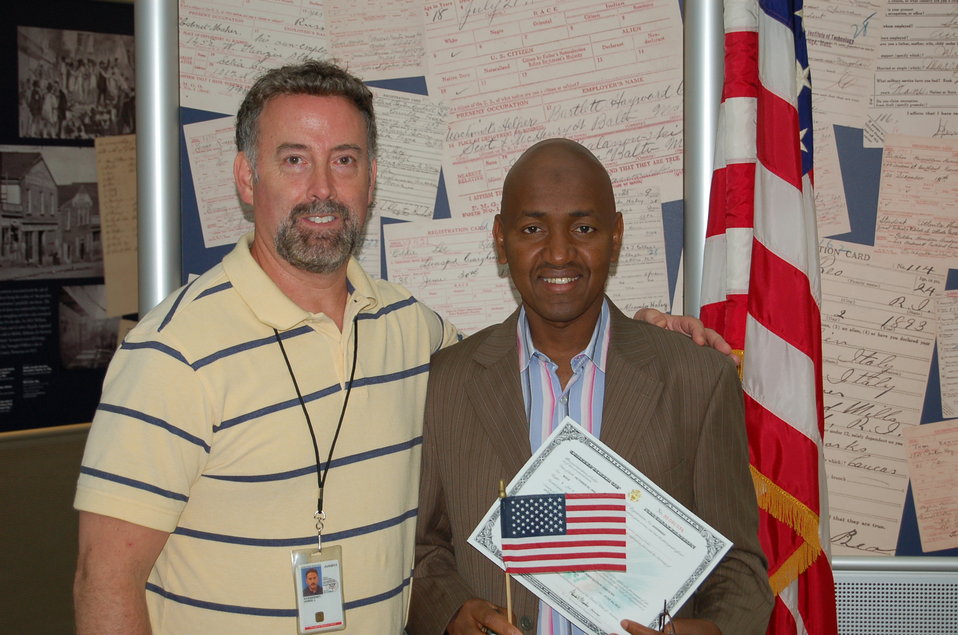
New Citizens